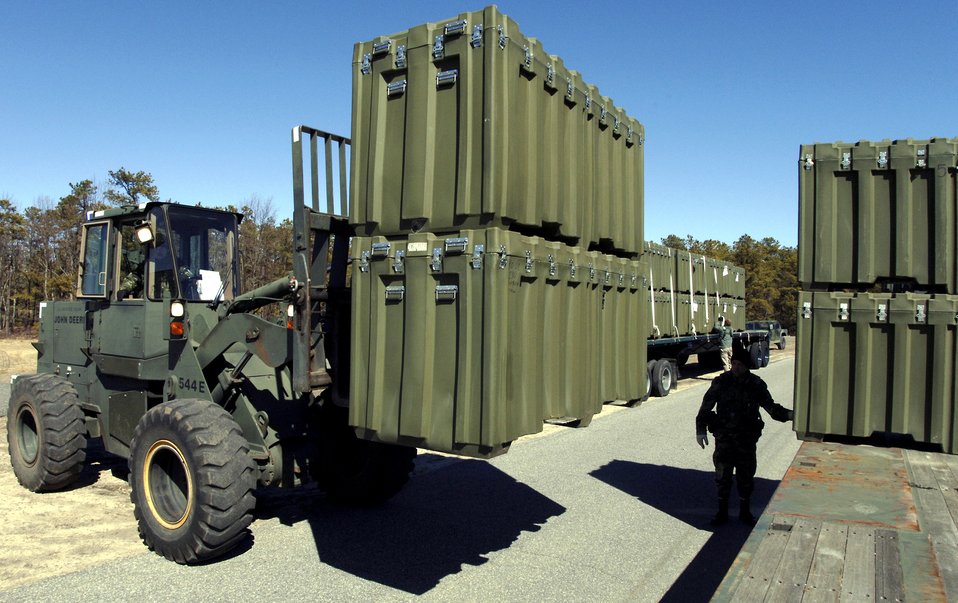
Exercise Eagle Flag

Airman unload relief cargo as part of Exercise Eagle Flag's humanitarian relief operations at Naval Air Engineering Station Lakehurst, N.J., Sunday, March 5, 2006. The exercise is designed to simulate real-world conditions as closely as possible. By the time the exercise ends March 10, Airmen will have processed and distributed more than 100,000 pounds of humanitarian aid. This is the first time the exercise has had a humanitarian relief operations scenario.